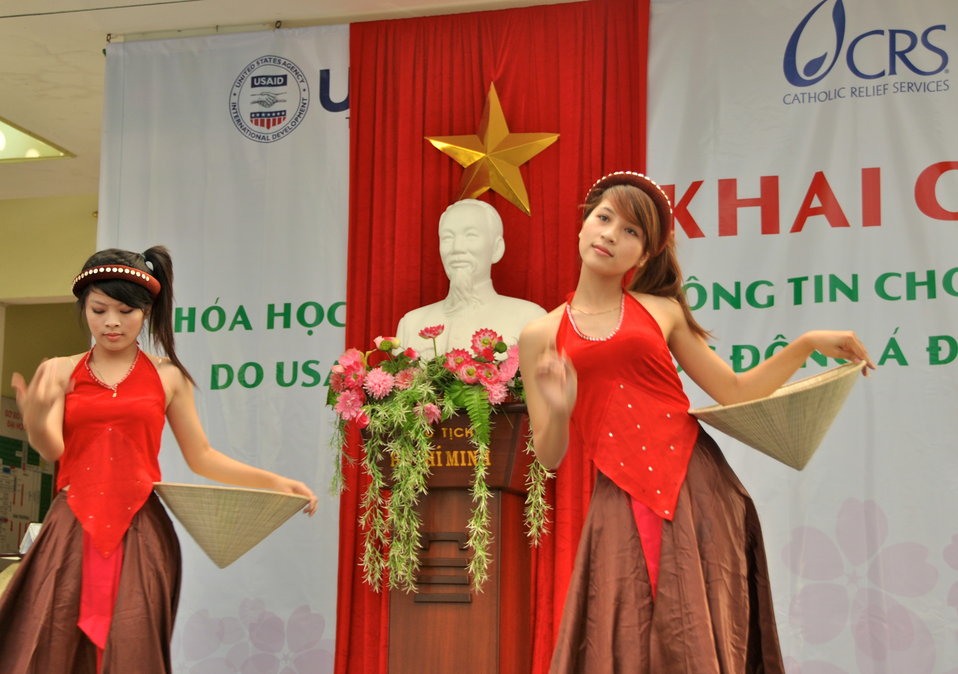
Dong A University joins with USAID and CRS to mark the International Day of Persons with Disabilities in Danang

Photo: @USAIDVietnam
December 3, 2012